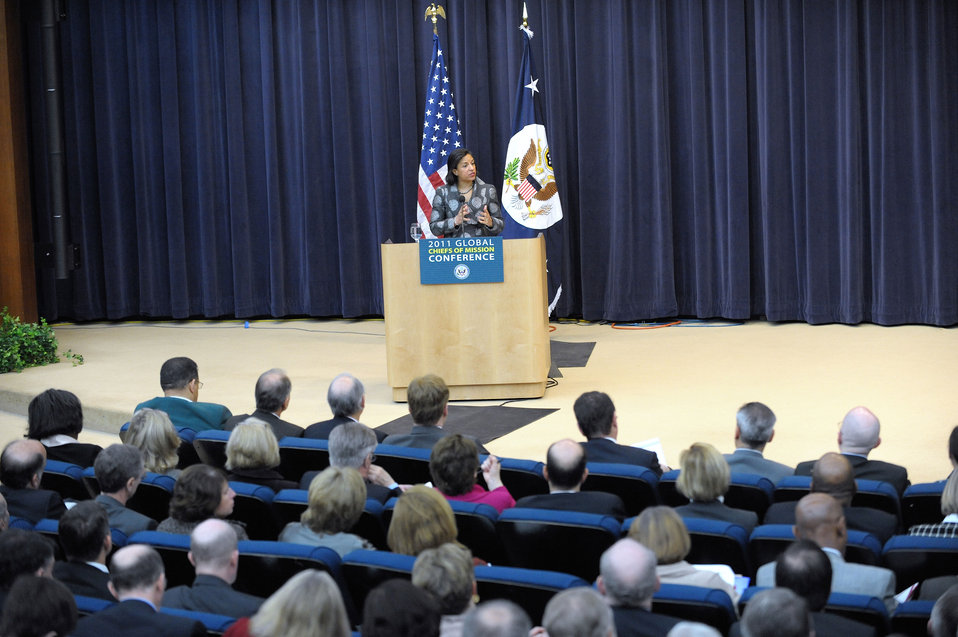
Ambassador Rice Delivers Remarks

U.S. Permanent Representative to the United Nations Susan Rice delivers remarks at the 2011 Global Chiefs of Mission Conference at the U.S. Department of State in Washington, D.C., on February 2, 2011.